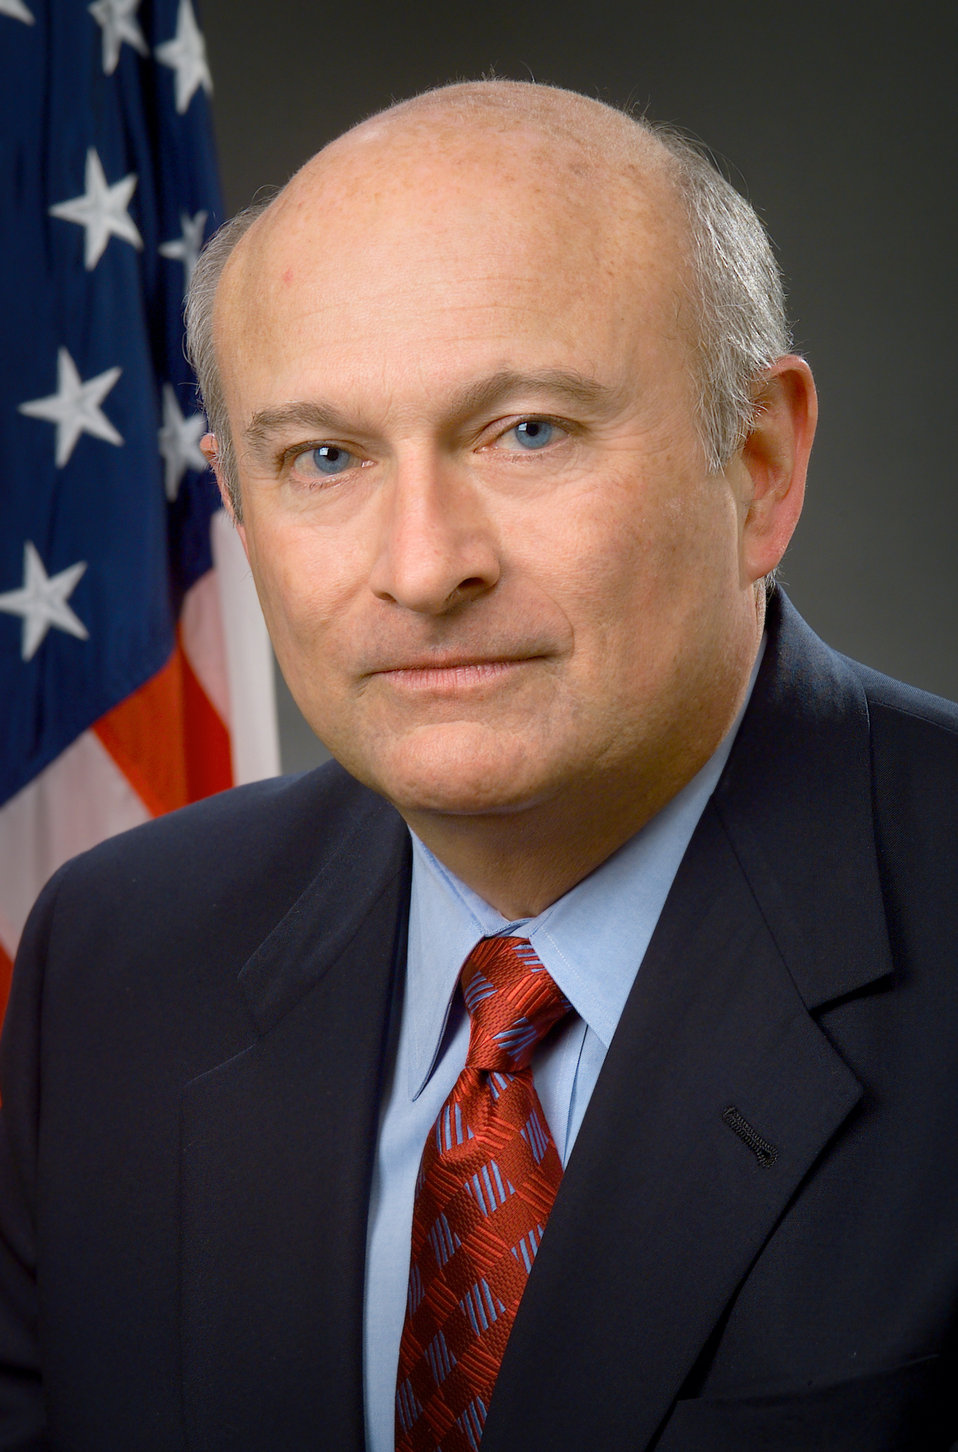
Photograph of Dr. Ed Thompson, Centers for Disease Control and Prevention.